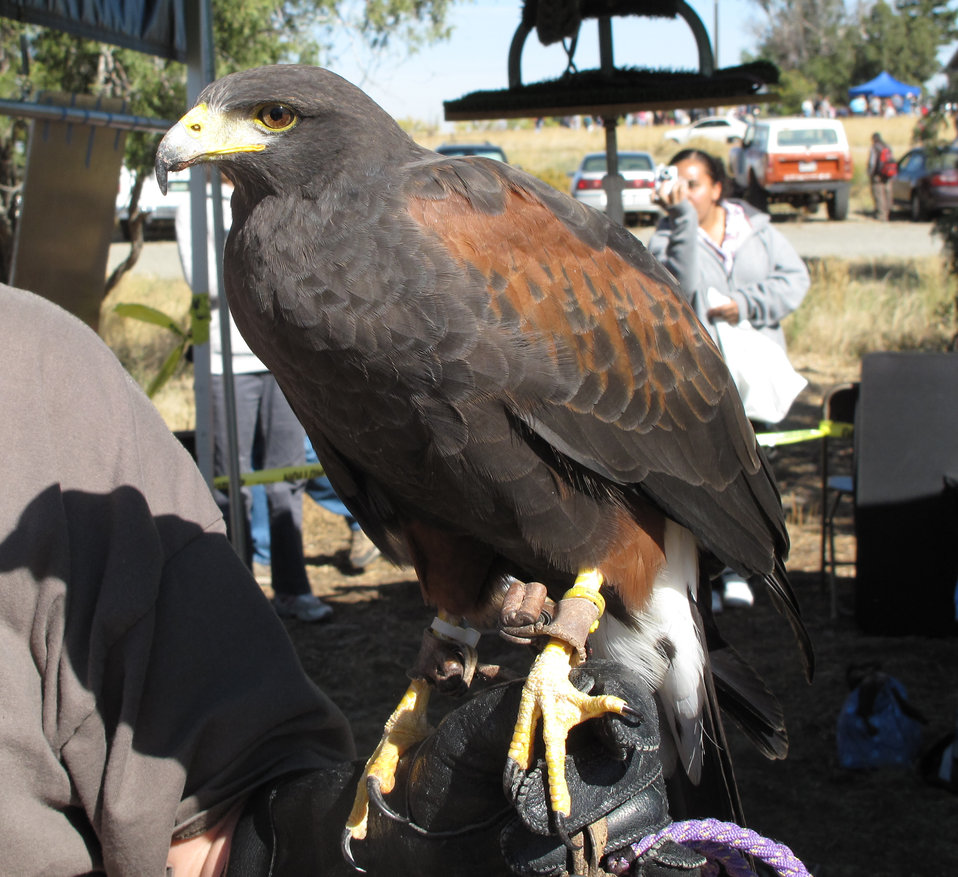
Refuge Round-Up 2010